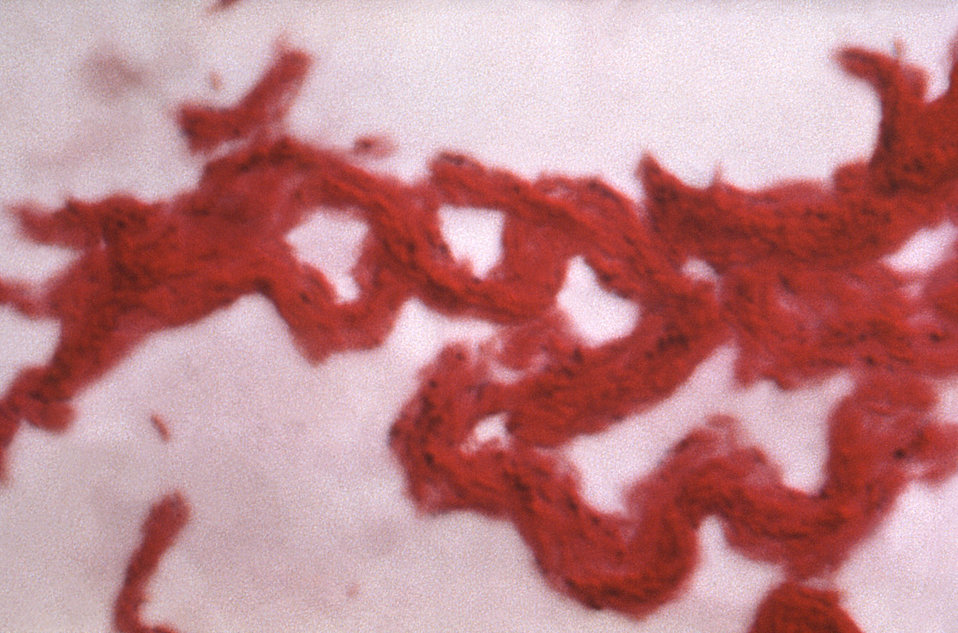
Under a high magnification of 1000X, this Ziehl-Neelsen stained mycobacterial culture specimen reveals numerous acid-fast bacilli, which by growing end-to-end, now displayed a morphologic phenomenon known as "cording".